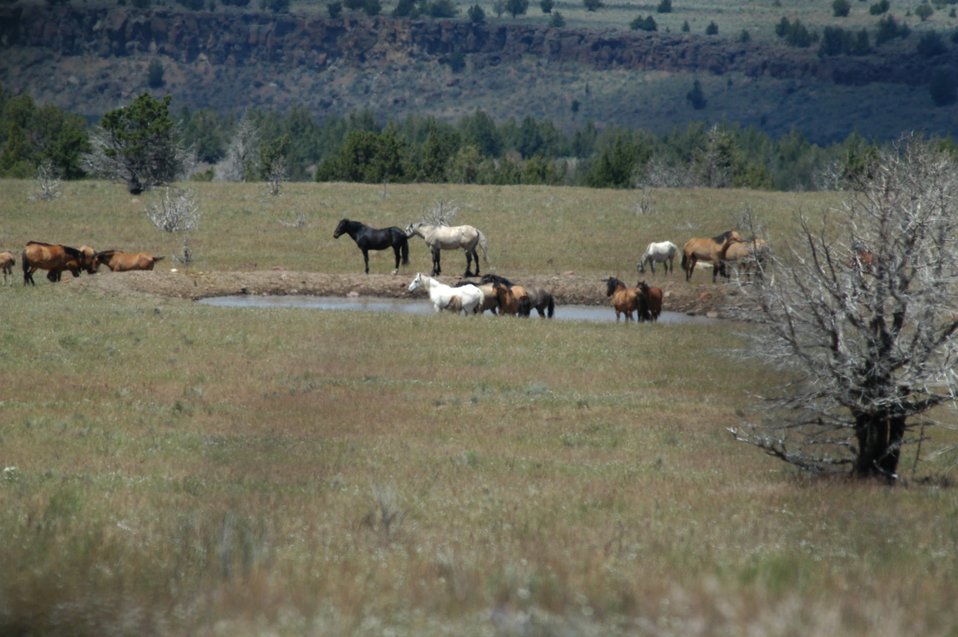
Kiger horses roam the plateaus of the Kiger Wildhorse Herd Management Area near Steens Mountain in Southeastern Oregon.